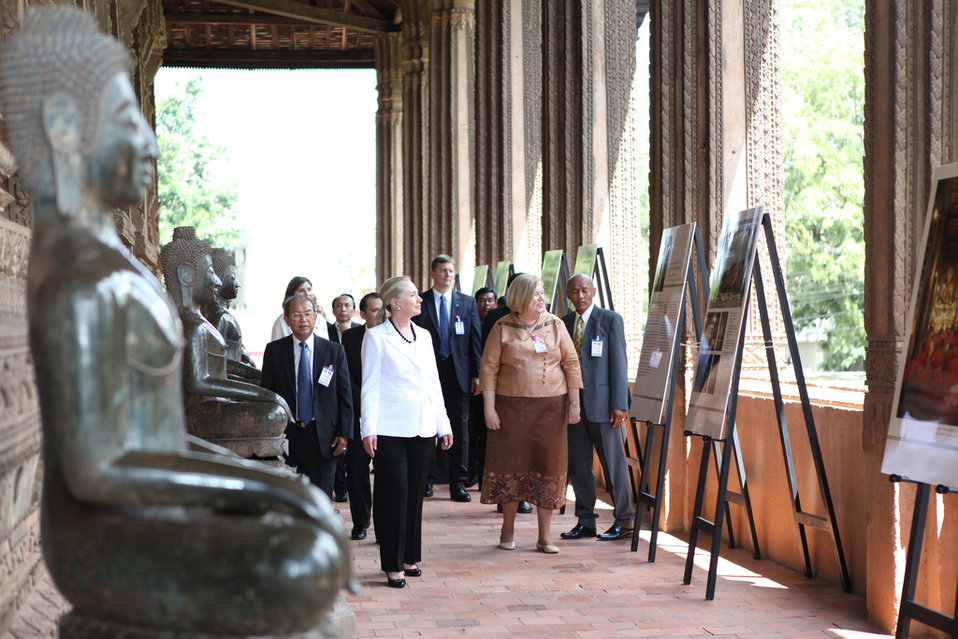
Secretary Clinton Tours the Ho Phra Keo Temple

U.S. Secretary of State Hillary Rodham Clinton tours the Ho Phra Keo Temple in Vientiane, Laos, on July 11, 2012.